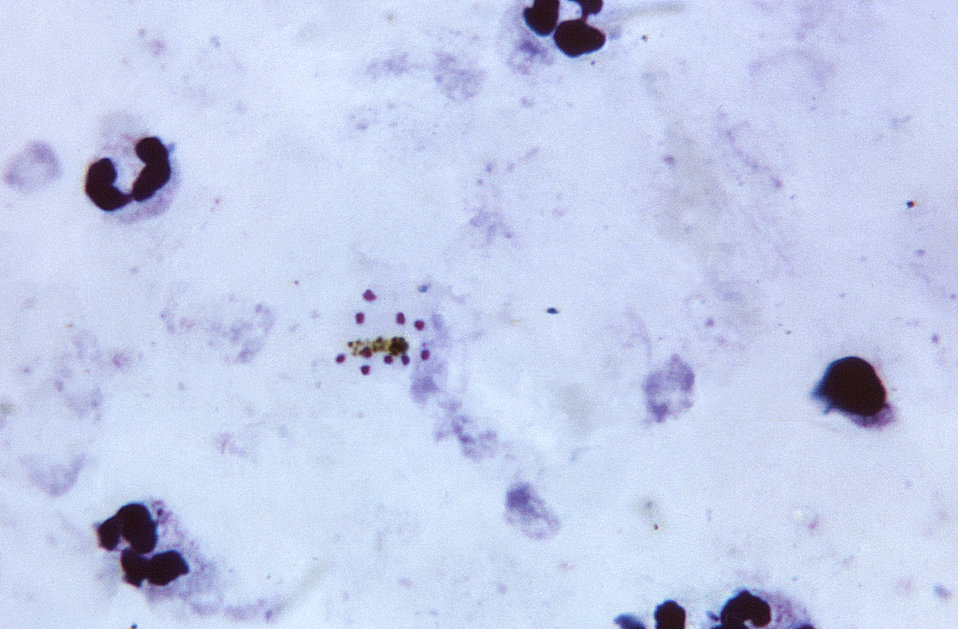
This thick film blood smear micrograph depicts a mature Plasmodium malariae schizont, containing ten merozoites within its scattered, faint cytoplasm.